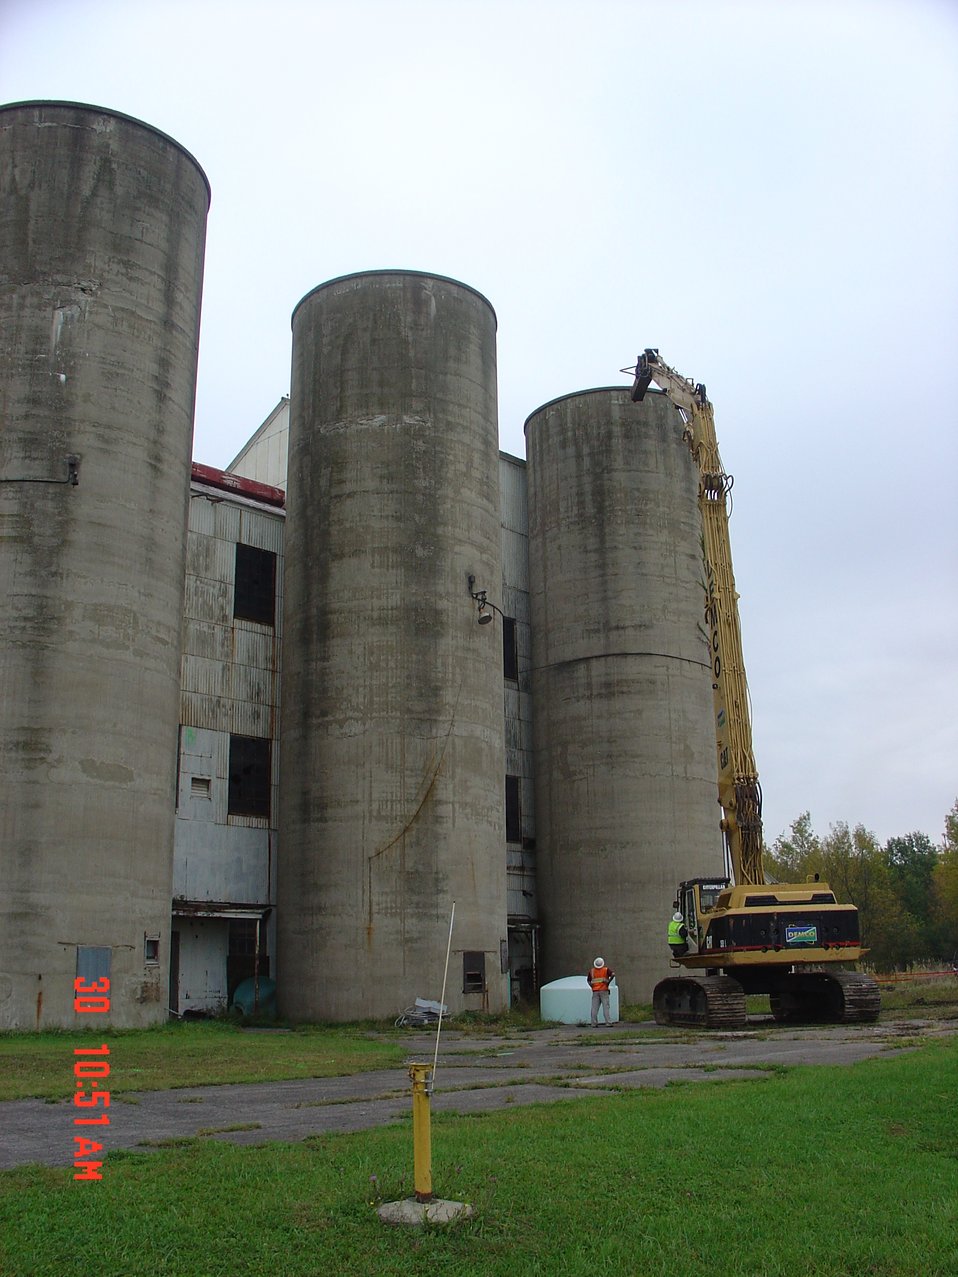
BLDG 401 SILO DEMOLITION

Activities from the Niagara Falls Storage Site, which is associated with the former Lake Ontario Ordnance Works. Formerly Utilized Sites Remedial Action Program (FUSRAP), a program initiated in 1974 to identify, investigate and clean up or control sites that were part of the Nation's early atomic energy and weapons program. Activities at the sites that are eligible for FUSRAP were conducted by Manhattan Engineer District (MED) or the Atomic Energy Commission (AEC), both predecessors of the Department of Energy (DOE). The U.S. Army Corps of Engineers was assigned management of FUSRAP by Congress in 1997.